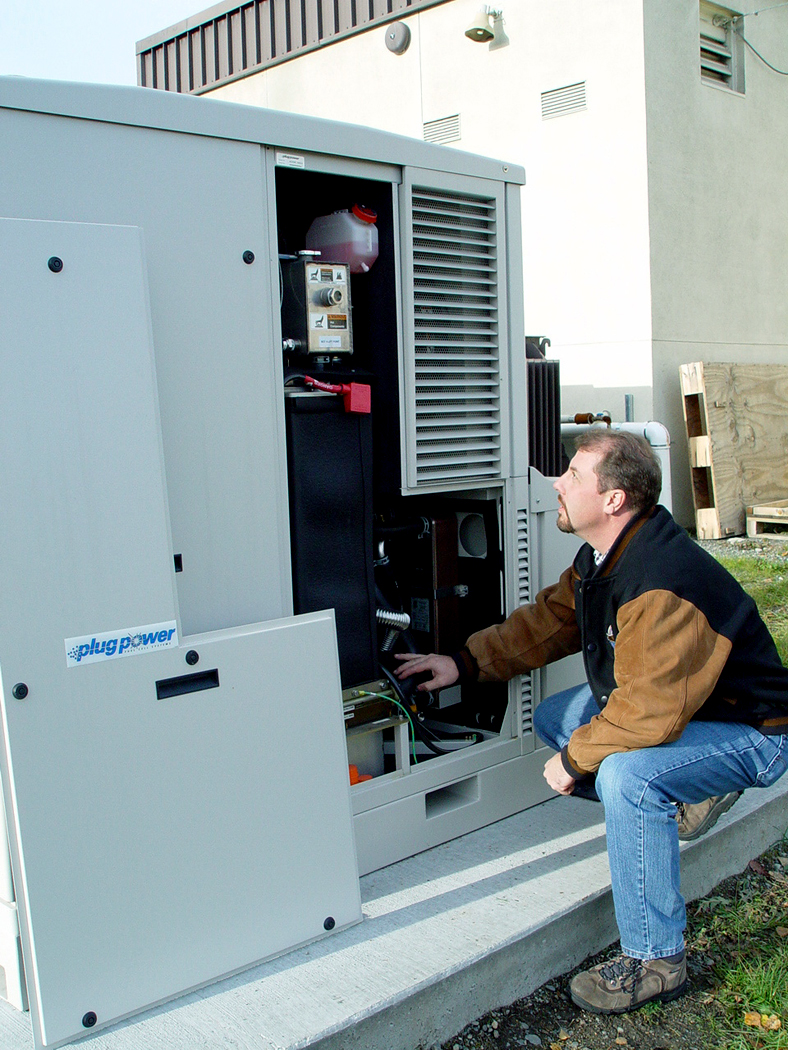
Elmendorf 'charged' by new technology

ELMENDORF AIR FORCE BASE, Alaska -- Air Force contractor, Jeff Server, a mechanical engineer, checks a fuel cell unit at a fire station here Oct. 18. The fuel cell is an environmentally-friendly power source being tested at Elmendorf.